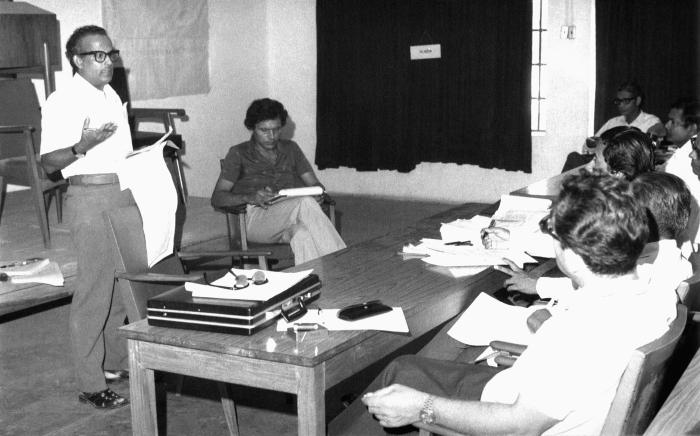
The Bangladesh Malaria Program Director, Dr. Mujibur Rahman (standing), along with Dr. Daniel Tarantola (seated, facing camera), two of the eradication efforts' best 'field generals', were shown here in this 1975 photograph, as they were briefing the 'troops'.